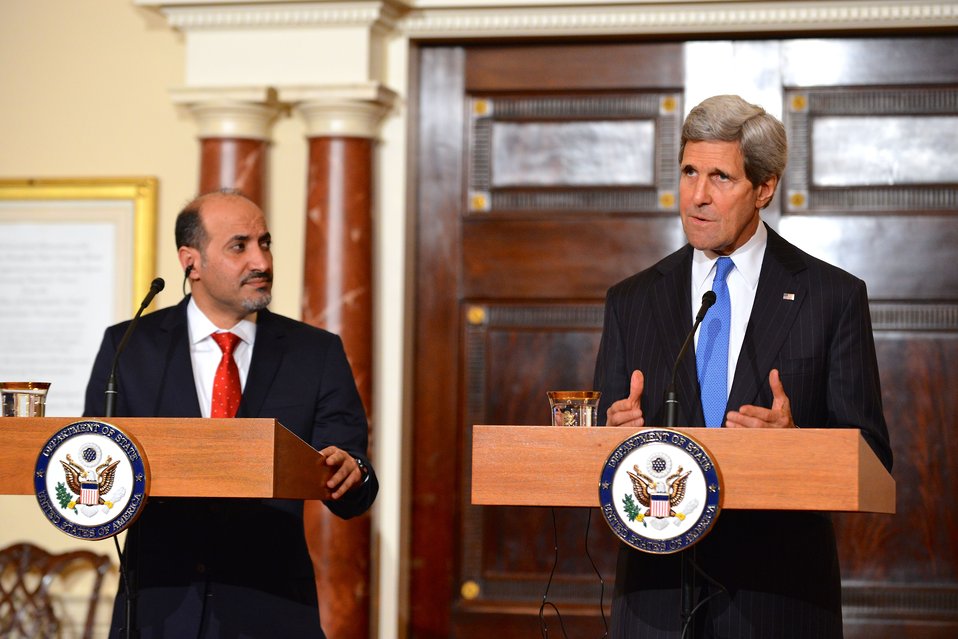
Secretary Kerry and Syrian Opposition Coalition President al-Jarba Address Reporters

U.S. Secretary of State John Kerry and Syrian Opposition Coalition President Ahmad al-Jarba members hold a joint news conference at the U.S. Department of State in Washington, D.C., on May 8, 2014.